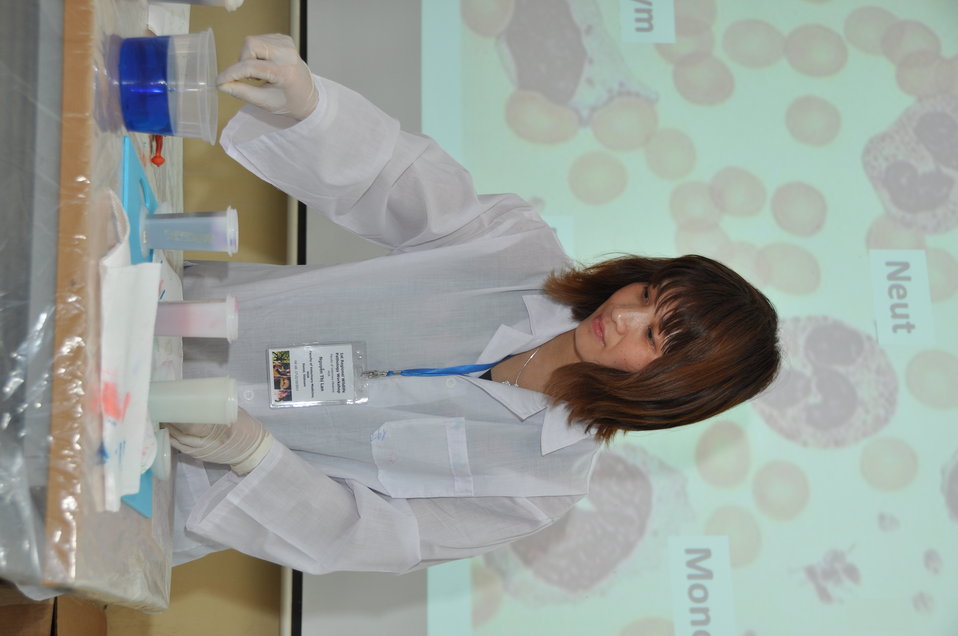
USAID EPT Smithsonian Pathology Training to Detect Emerging Infectious Diseases Wildlife and Other Animals in Vietnam Workshop